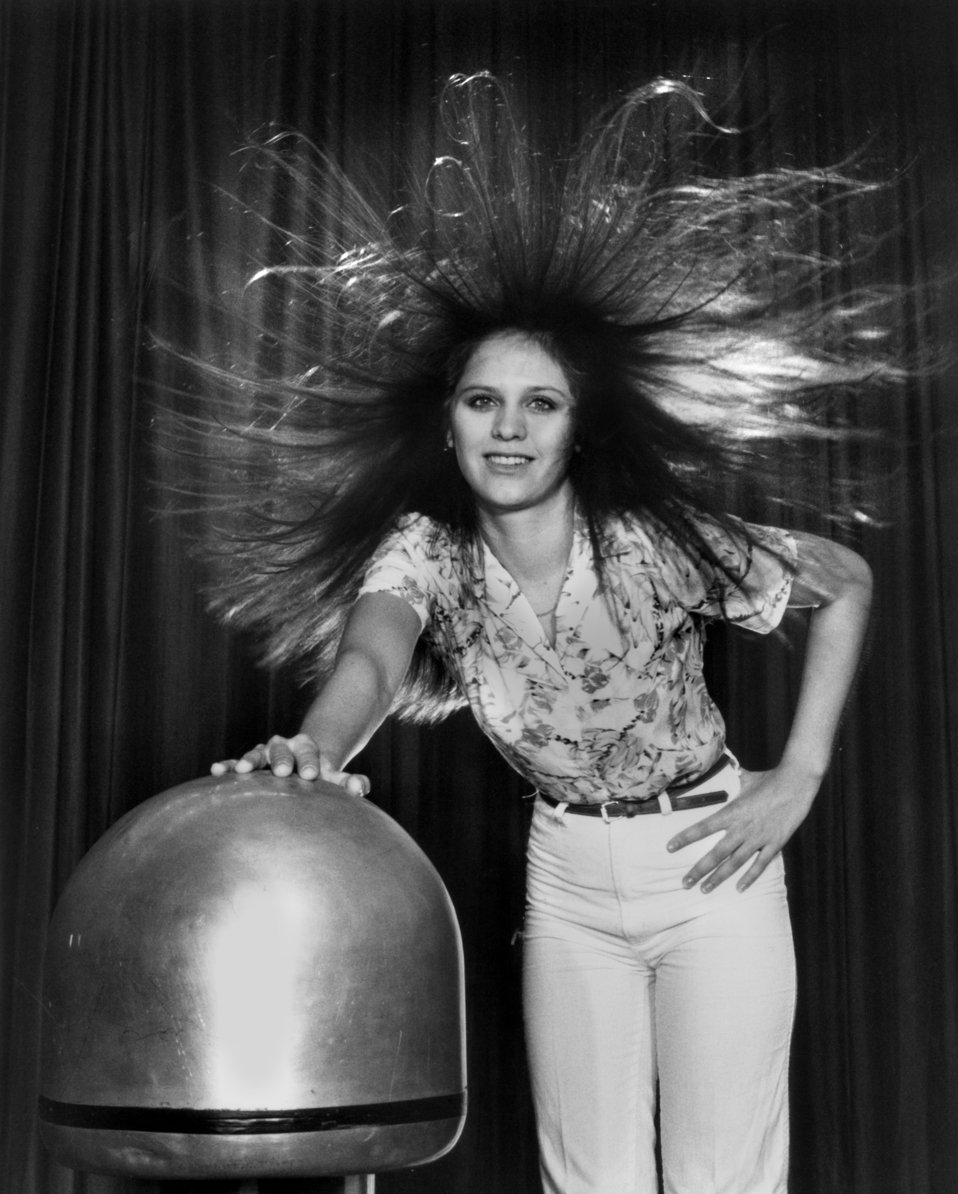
Van de Graaff at American Museum of Science and Energy Oak Ridge

82-25 DOE photo by Frank Hoffman
Van de Graaff at American Museum of Science and Energy Oak Ridge Tennessee 2-18-1982